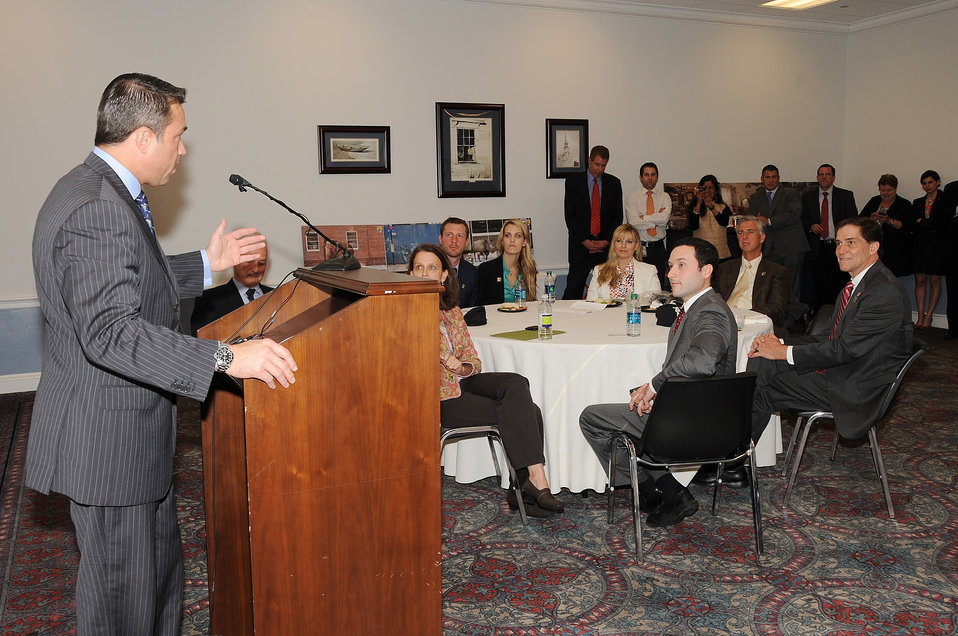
Save Vanishing Species on Capitol Hill

Michael Grimm- NY Congress speak to audience